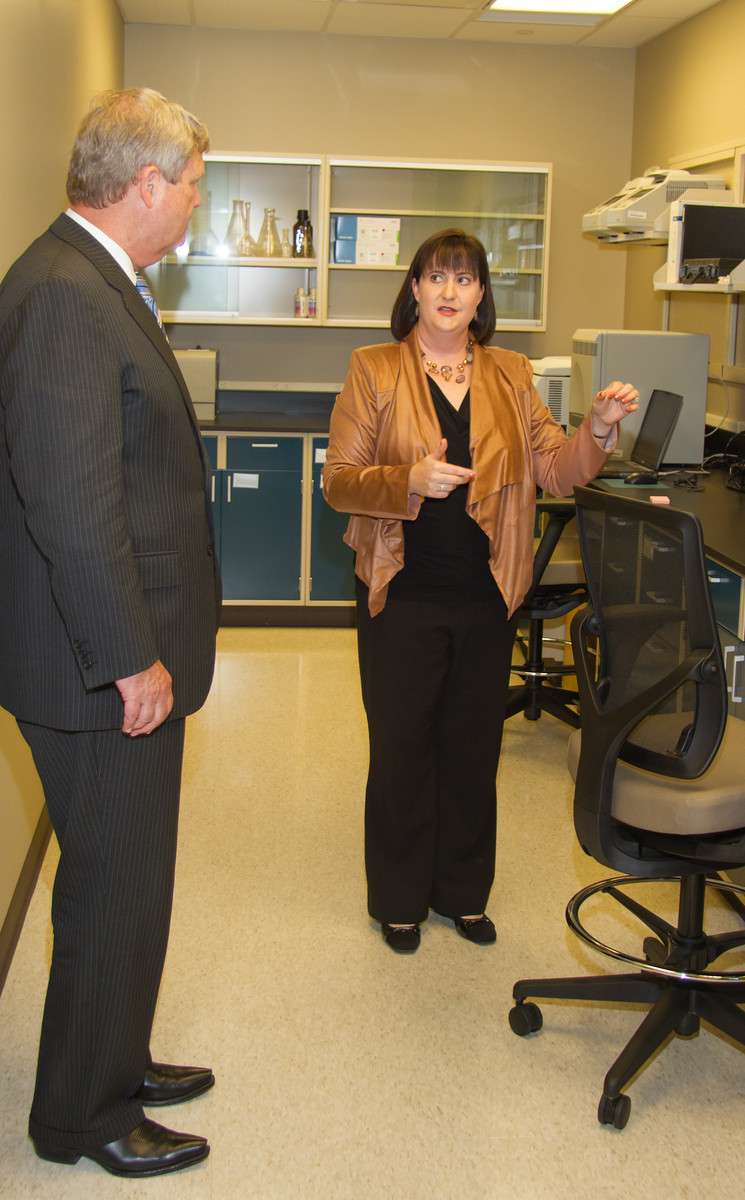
Dr.Tandace Bell, Chief of Grain Inspection, Packers and Stockyards Administration (GIPSA), Biotechnology and Analytical Services Branch, discusses with Agriculture Secretary Tom Vilsack GIPSA's role in supporting agricultural biotechnology in Kansas City, MO, on Wednesday, Oct. 23, 2013.